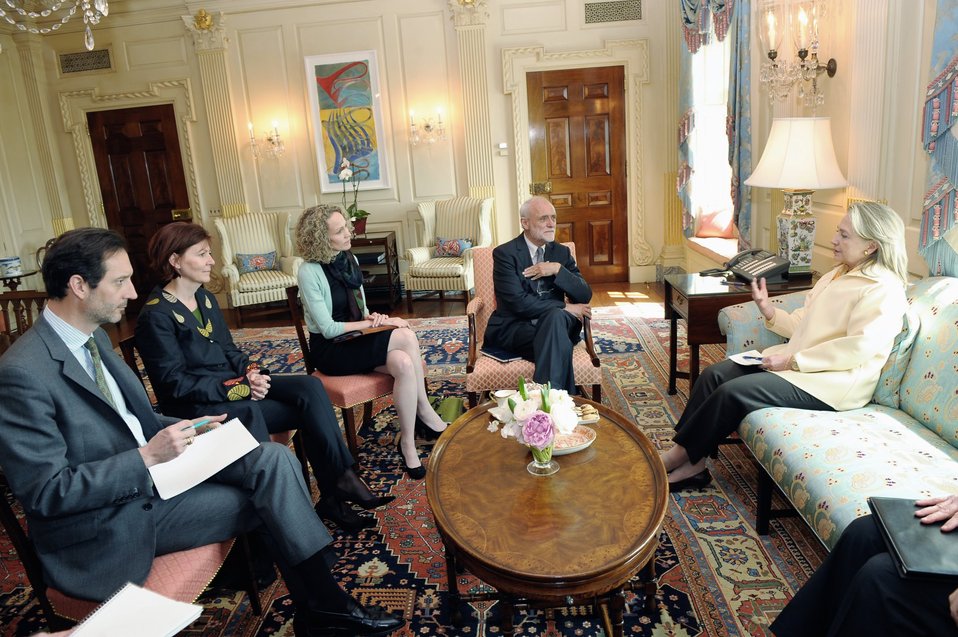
Secretary Clinton Meets With Dr. Kellenberger

U.S. Secretary of State Hillary Rodham Clinton meets with Dr. Jakob Kellenberger, President of the International Committee of the Red Cross (ICRC), at the U.S. Department of State in Washington, D.C., on March 28, 2012.